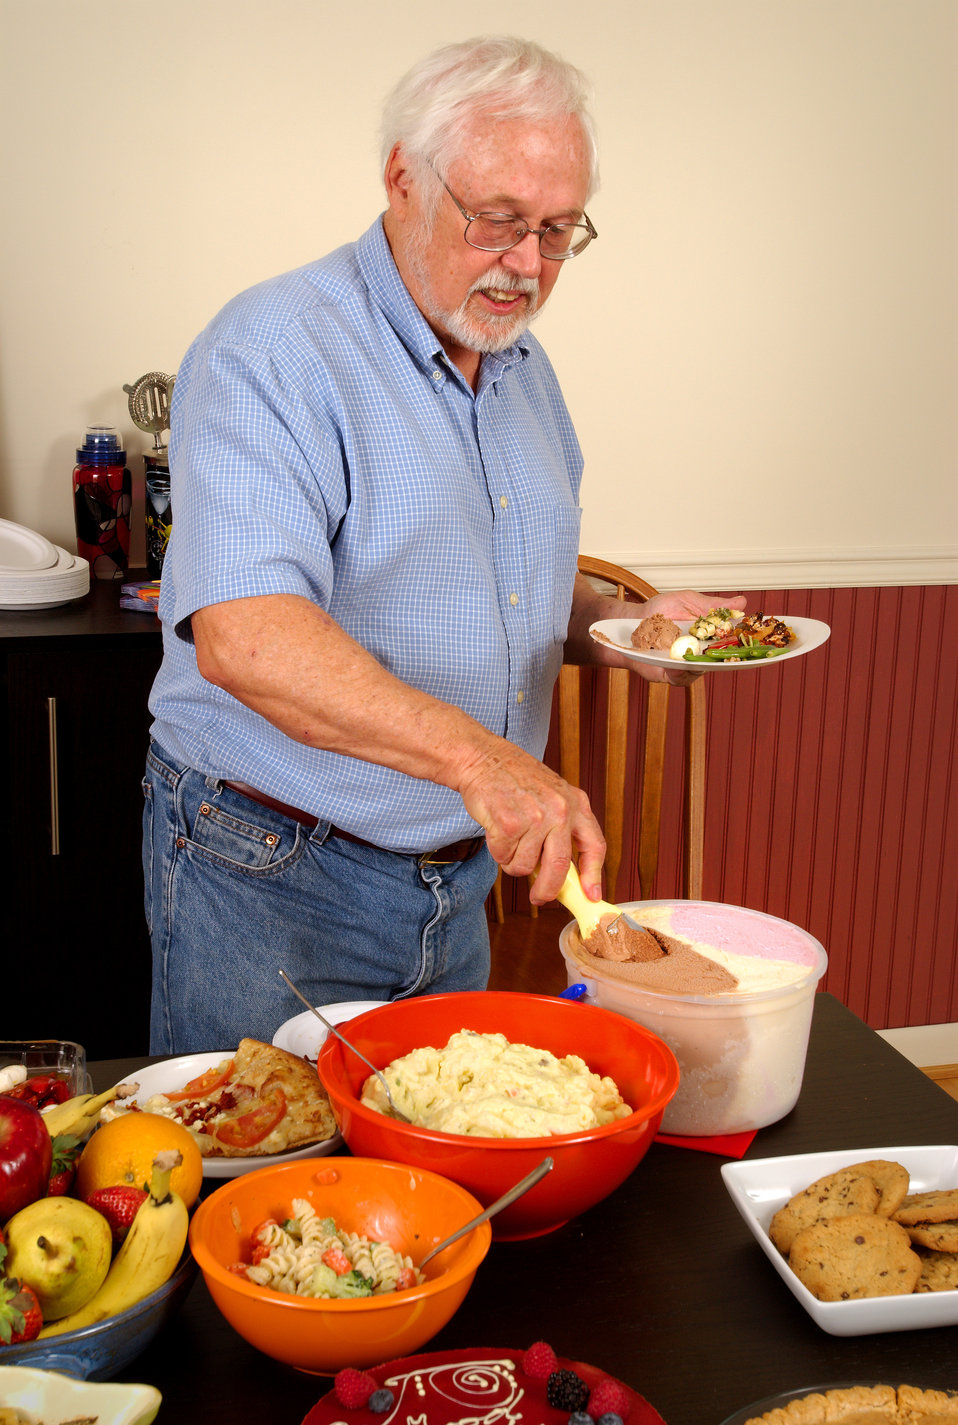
A man serving food

This image depicts a middle-aged man serving himself from a dining table, atop which was plated a large quantity of foods representing a number of different food groups: grains, fruits, vegetables, milk products, meats/poultry/fish, and nuts/seeds/legumes. Here, he was about to add what appears to be some ice cream to his plate.